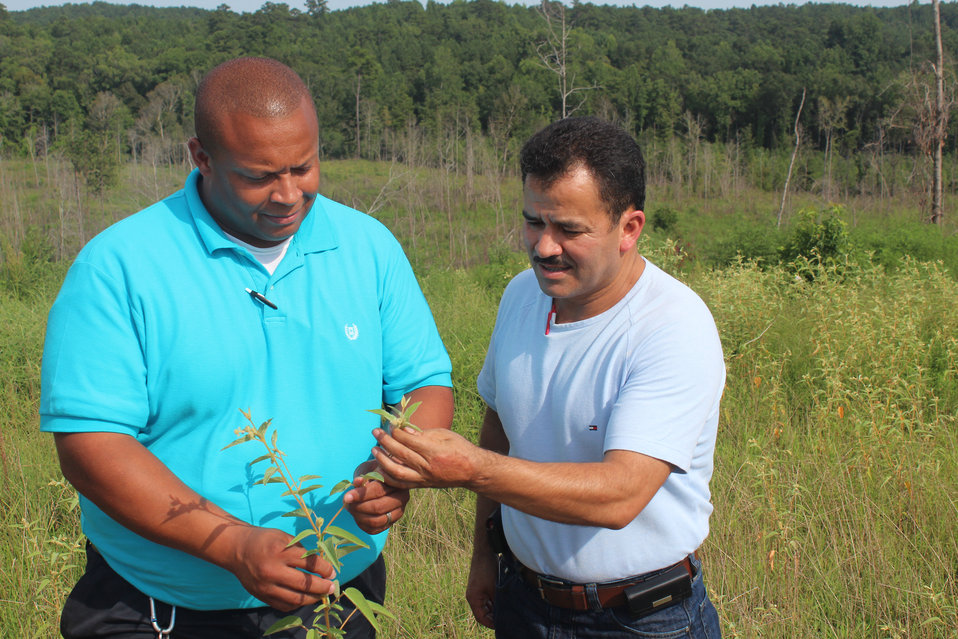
EQIP1

U.S. Department of Agriculture (USDA) Natural Resource Conservation Service (NRCS) Supervisory District Conservationist Kelvin Jackson worked with Variano “Chino” Suarez in Mississippi on improving forested lands with conservation programs.